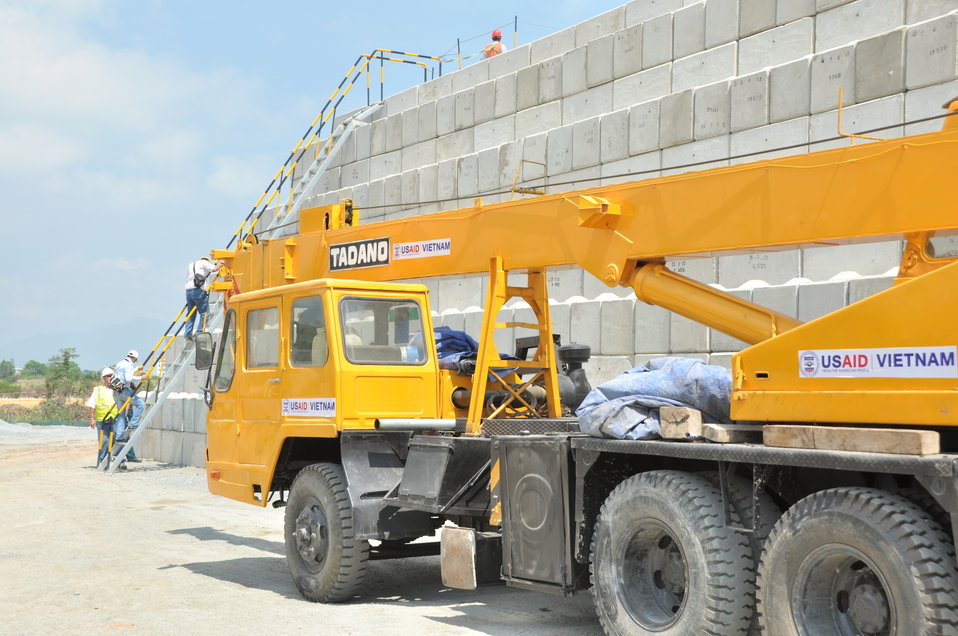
Media Tour of Environmental Remediation of Dioxin Contamination at Danang Airport

Danang, Vietnam
April 24, 2013